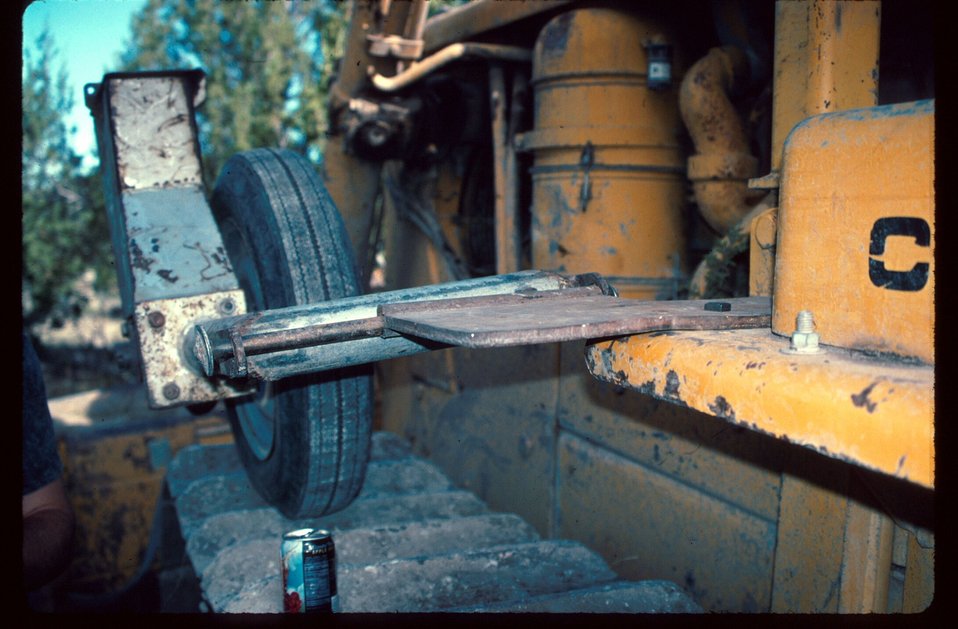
Foothills Rehab Boise Range Restoration Project